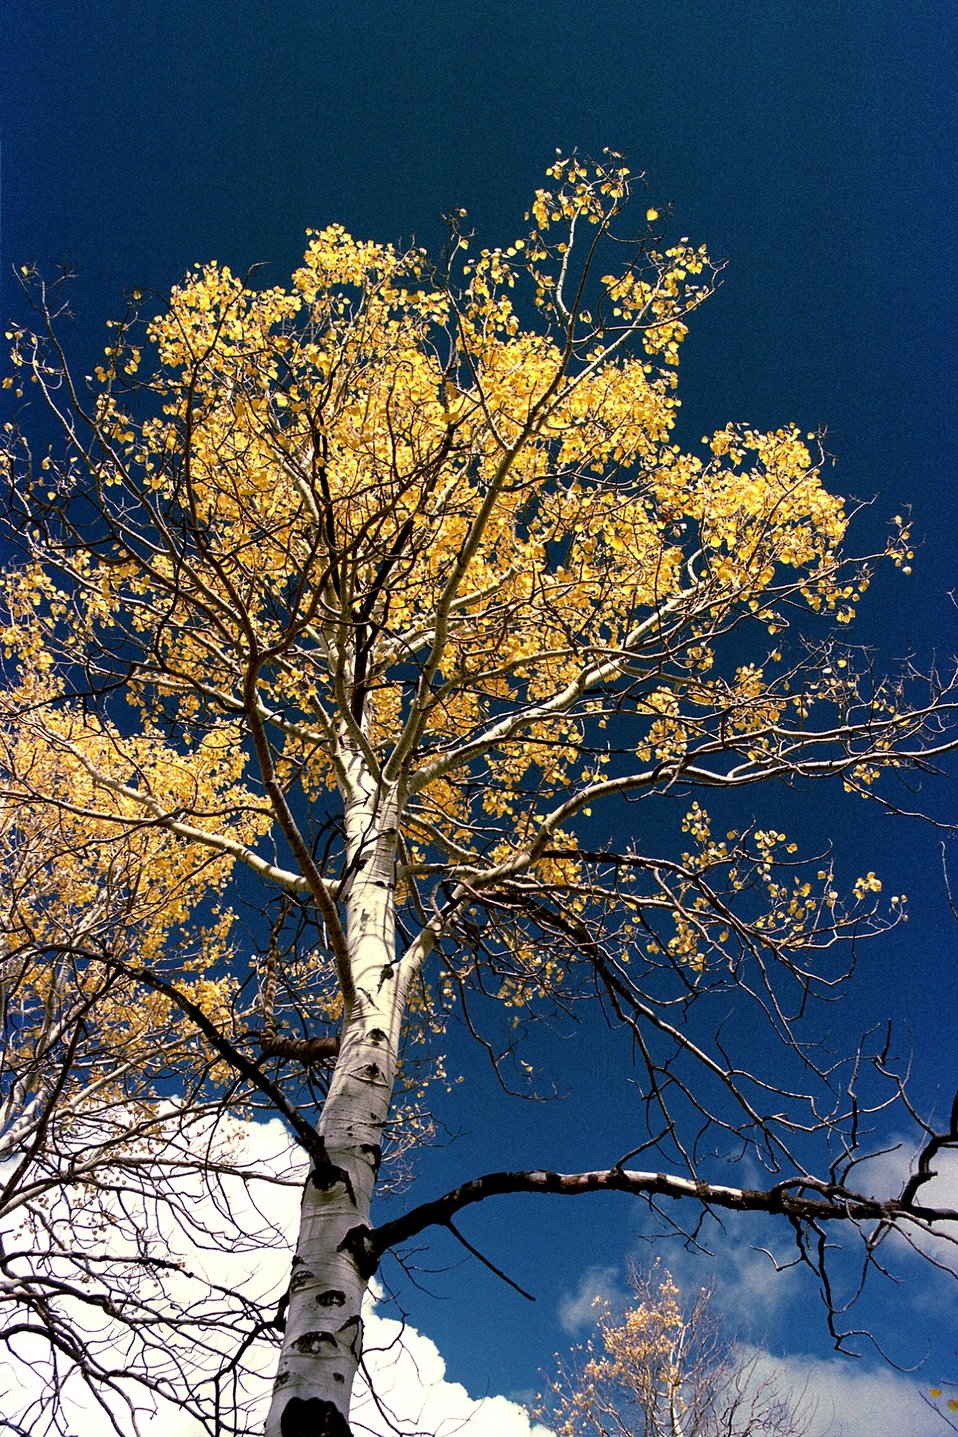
Aspen at Fish Lake, Steen's Mountain.